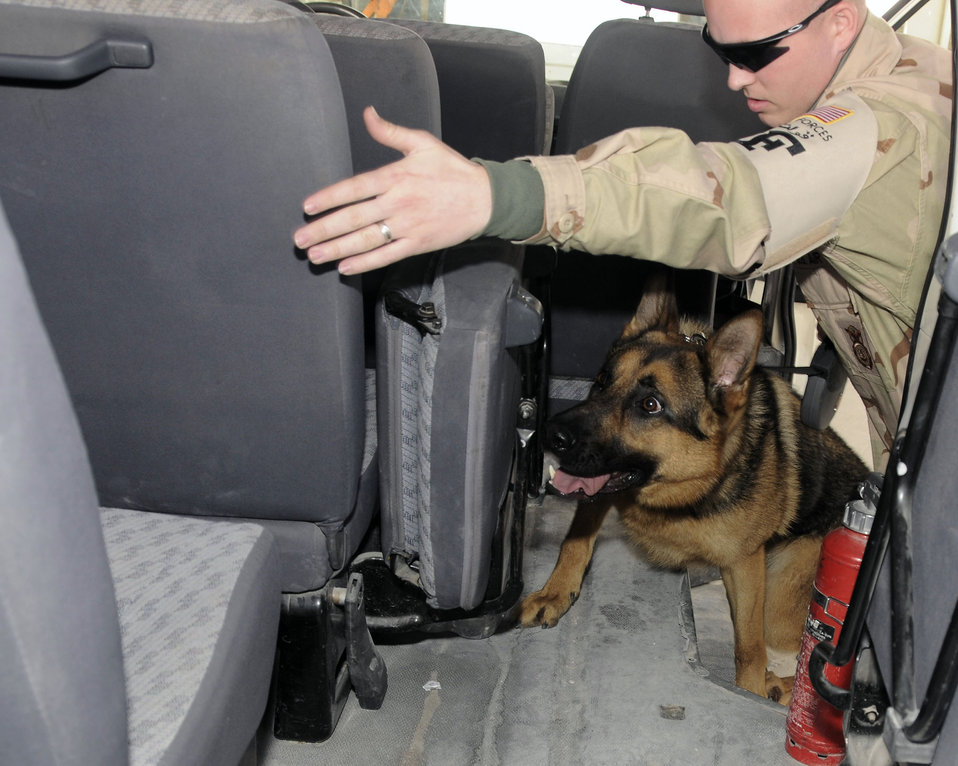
K-9 team keeps crime on a leash

Sano, a military working dog, and Staff Sgt. Kyle Richards, his handler, conduct a routine search inside of a working van March 6 at Southwest Asa. Sano, a 2-year- old German Shepard, is trained on detecting illegal substances and explosives.